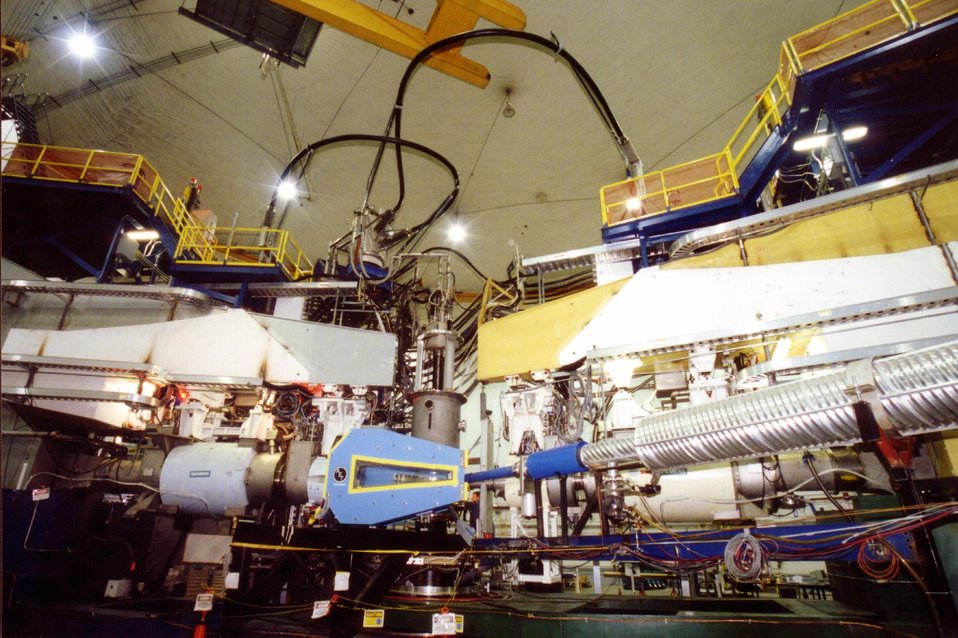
VIEW OF EXPERIMENTAL HALL A SET FOR BEAM WITH EXPERIMENTAL MAGNET IN PLACE AT THE THOMAS JEFFERSON NATIONAL ACCELERATOR FACILITY.

THE JEFFERSON LAB IS BUILT FOR NUCLEAR PHYSICS RESEARCH. SCIENTISTS USE SUPERCONDUCTING ELECTRON ACCELERATING TECHNOLOGY AT THE LAB'S CONTINUOUS ELECTRON BEAM ACCELERATOR (CEBAF) TO CONDUCT EXPERIMENTS. HIGH ENERGY ELECTRON BEAMS FROM THE ACCELERATOR ALLOWS SCIENTISTS TO PROBE THE ATOM'S NUCLEUS, REVEALING HOW QUARKS MAKE UP PROTONS, NEUTRONS, AND THE NUCLEUS ITSELF.